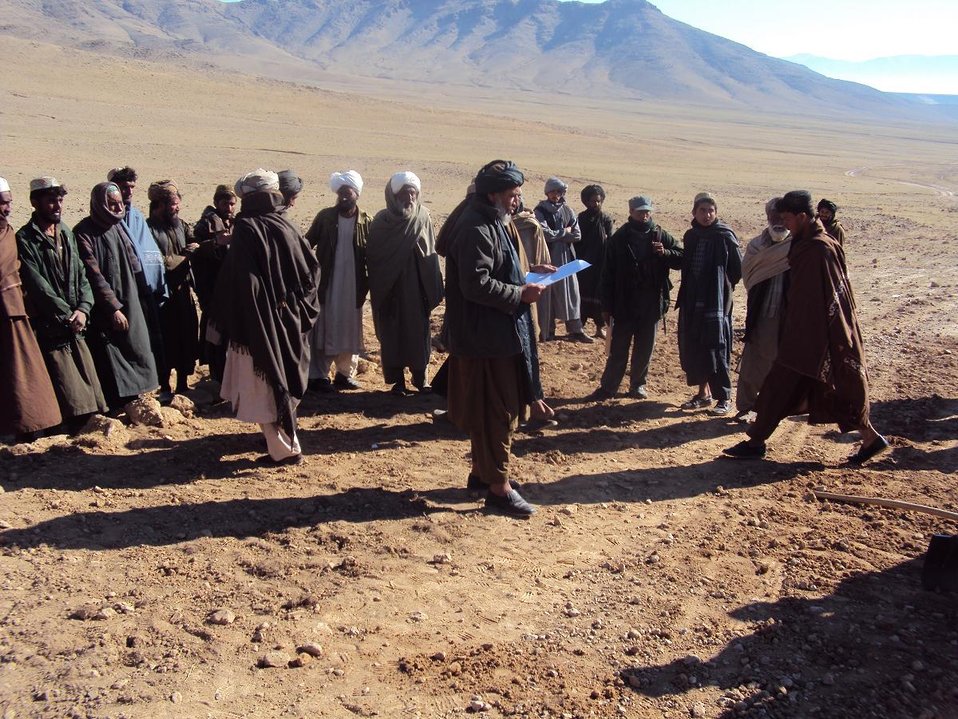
district governor DSO police on sight for first payment